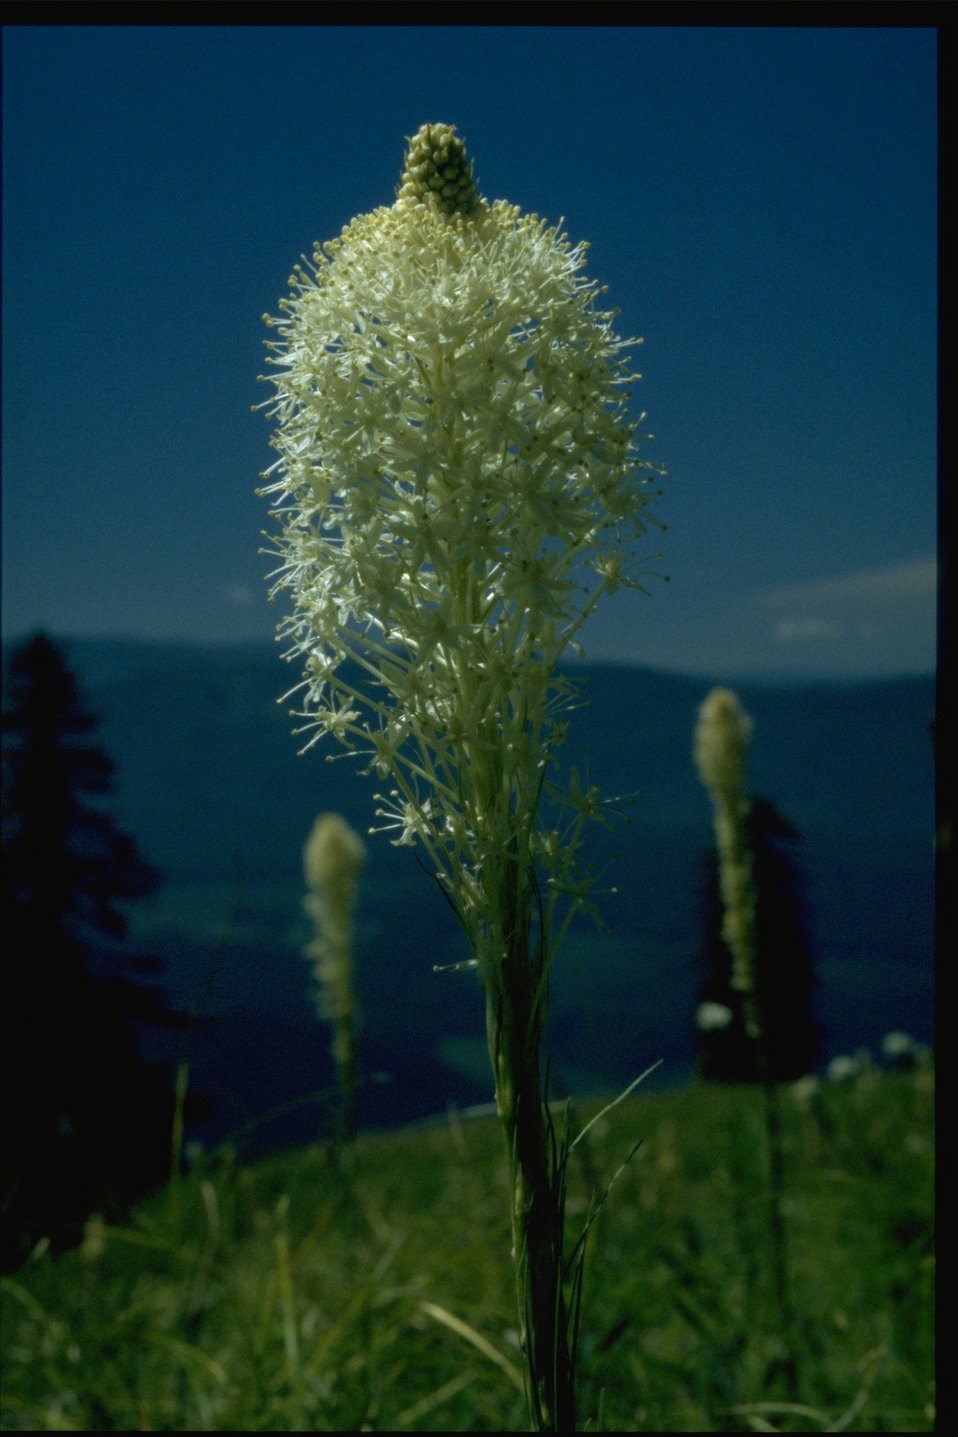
Closeup shot of Xenophyllum tenax.